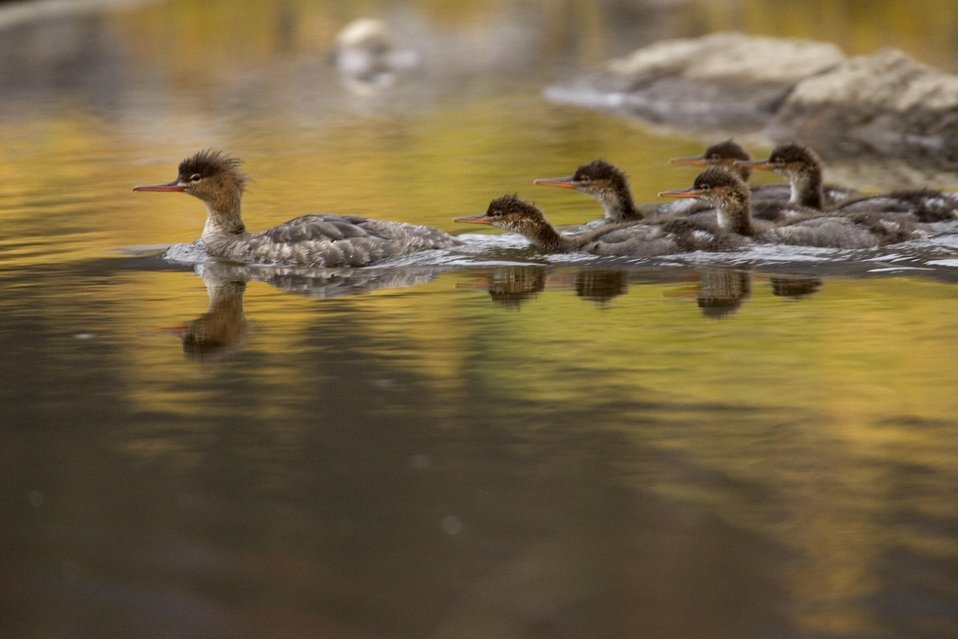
Arctic National Wildlife Refuge